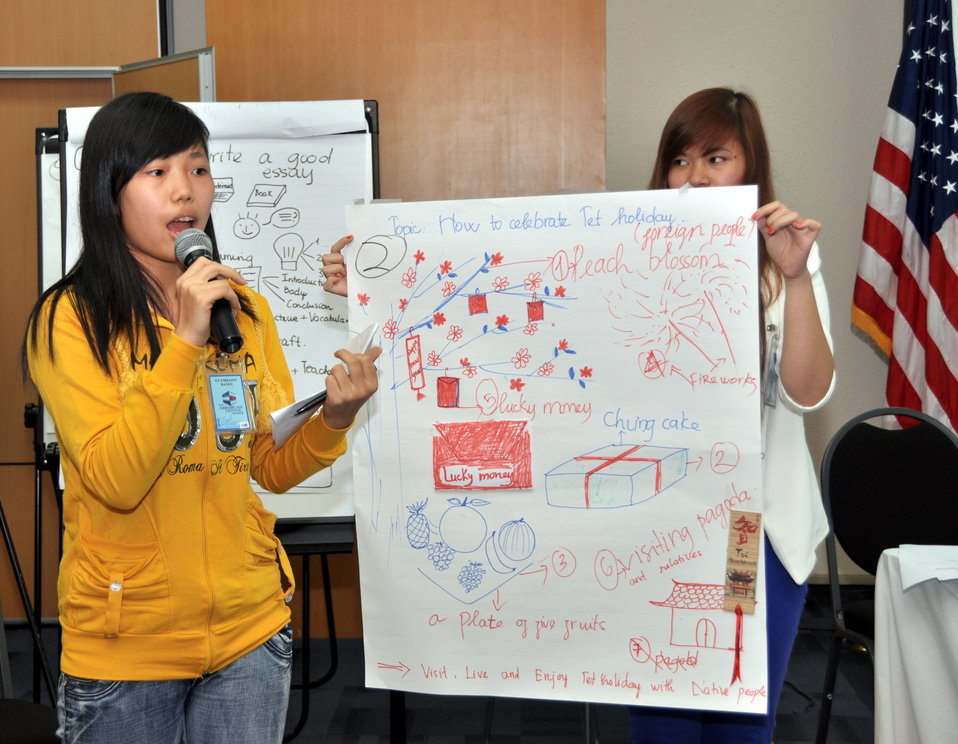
Students join the ‘USAID and Higher Education in Vietnam’ talk

Photo: @USAIDVietnam, November 19, 2012